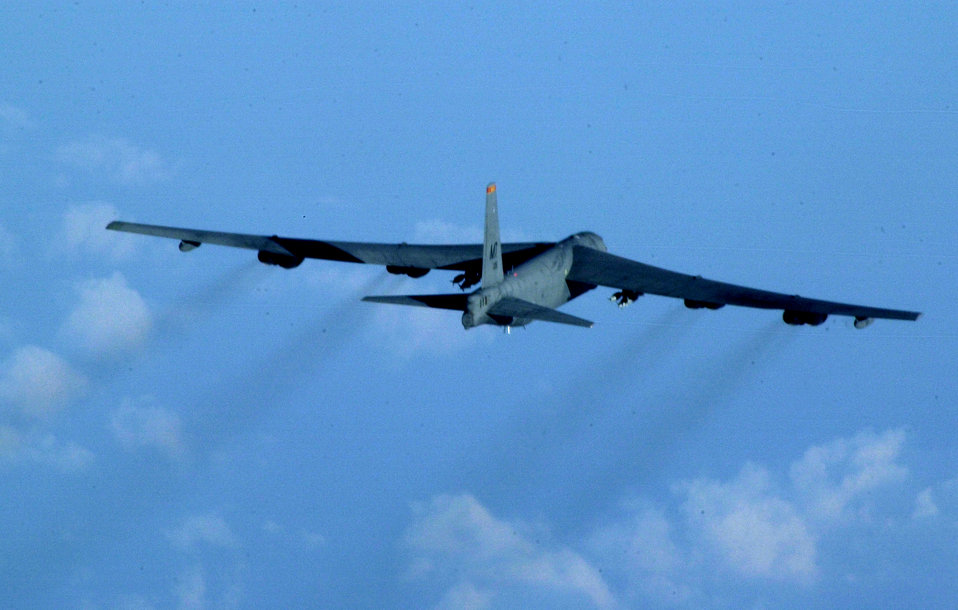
Buff sortie

OPERATION IRAQI FREEDOM -- A B-52 Stratofortress heads towards Iraq March 24 armed with a combination of air-launched cruise missiles and joint direct attack munitions. The venerable bomber is playing a key role in Operation Iraqi Freedom. This B-52 is from Minot Air Force Base, N.D., and is assigned to the 23rd Expeditionary Bomb Squadron.